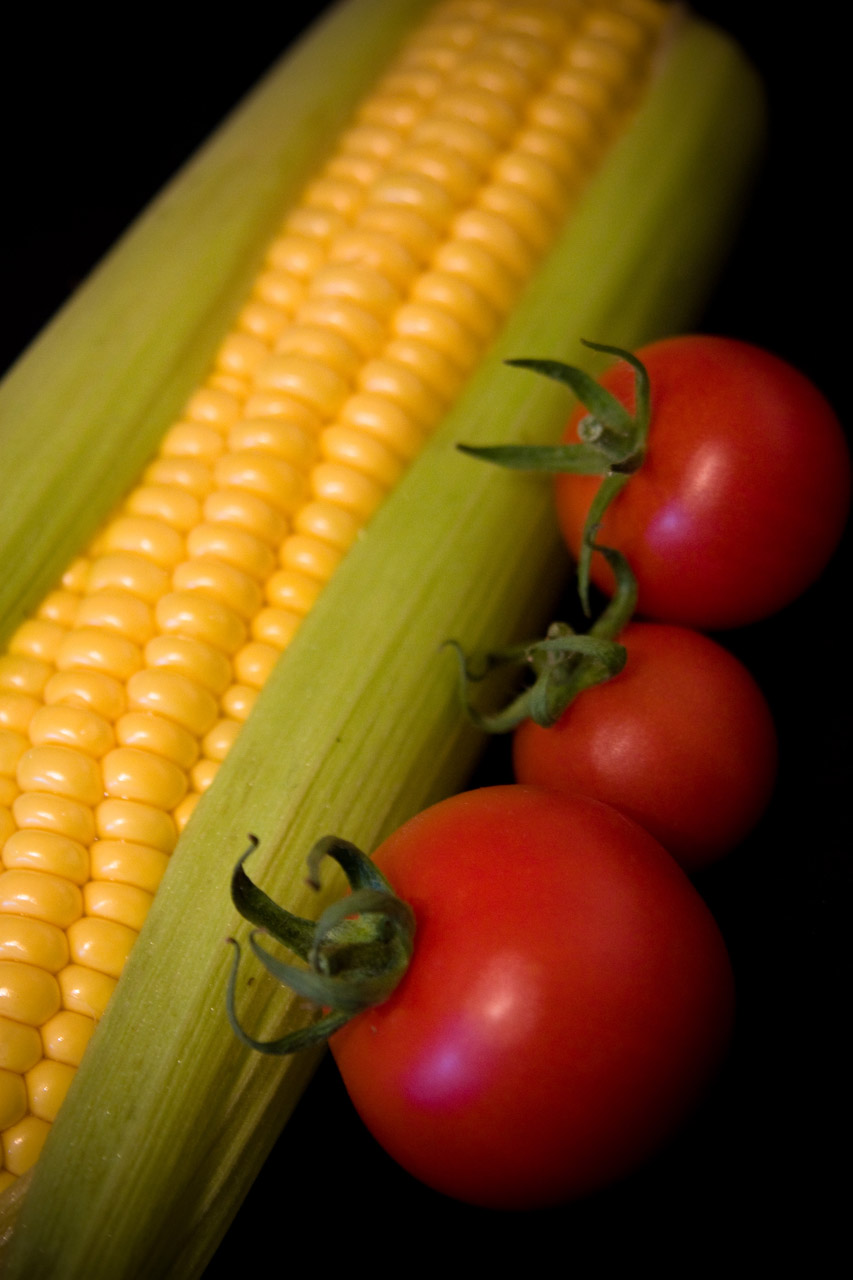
Sweetcorn and tomato.